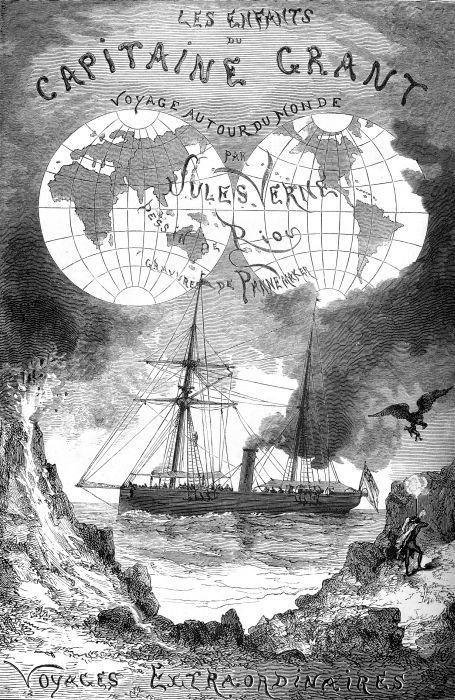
Čeština: Původní ilustrace Edouarda Rioua k románu J. Verna. An ilustration from the novel 'In Search of the Castaways; or Captain Grant's Children' by Jules Verne drawn by Édouard Riou. Français : 'Les Enfants du capitaine Grant', Édouard Riou. Polski: Ilustracja powieści Juliusza Verne'a 'Dzieci kapitana Granta' autorstwa Édouarda Riou. Português: Uma ilustração de 'Os Filhos do Capitão Grant' de Júlio Verne feita por Édouard Riou.